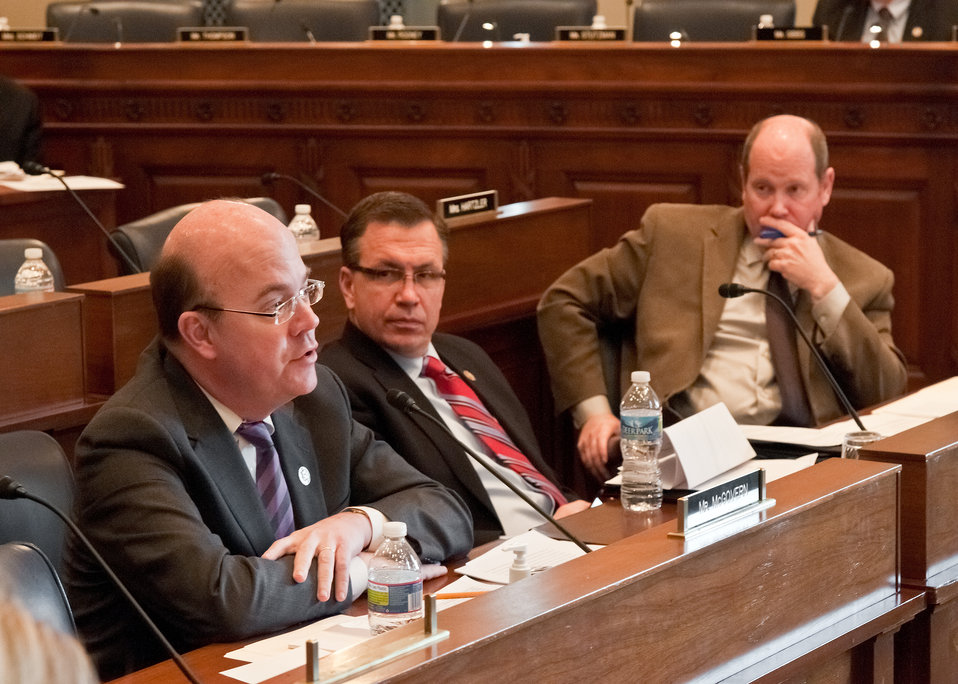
From left: Representatives James McGovern, Massachusetts, Robert Schilling, Illinois and Reid Ribble, Wisconsin question Agriculture Secretary Tom Vilsack during a United States Department of Agriculture budget hearing on the “State of the Ag Economy” at a House Agriculture Committee hearing in the Longworth House Office Building in Washington, D.C., Thursday, February 17, 2011. Rep. McGovern’s specific questions were on hunger and nutrition.